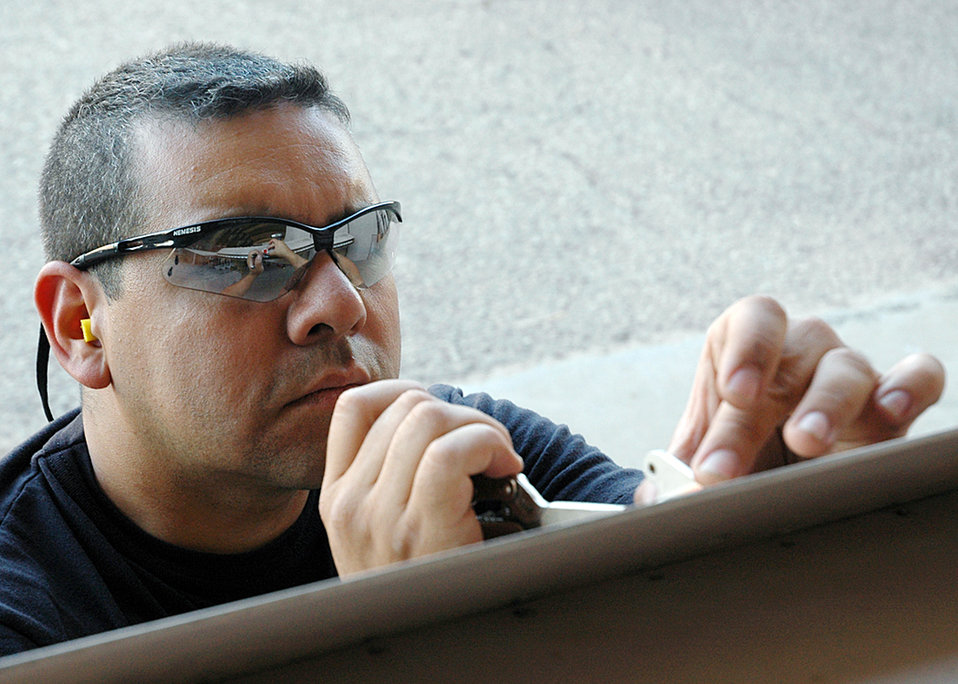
Mission accomplished for Airmen on project team

Tech. Sgt. Vincente Tello installs a bracket onto an Iraqi Air Force Comp Air 7SLX aircraft at Kirkuk Air Base, Iraq. Sergeant Tello is an aircraft structural maintenance craftsman with the aircraft project team.